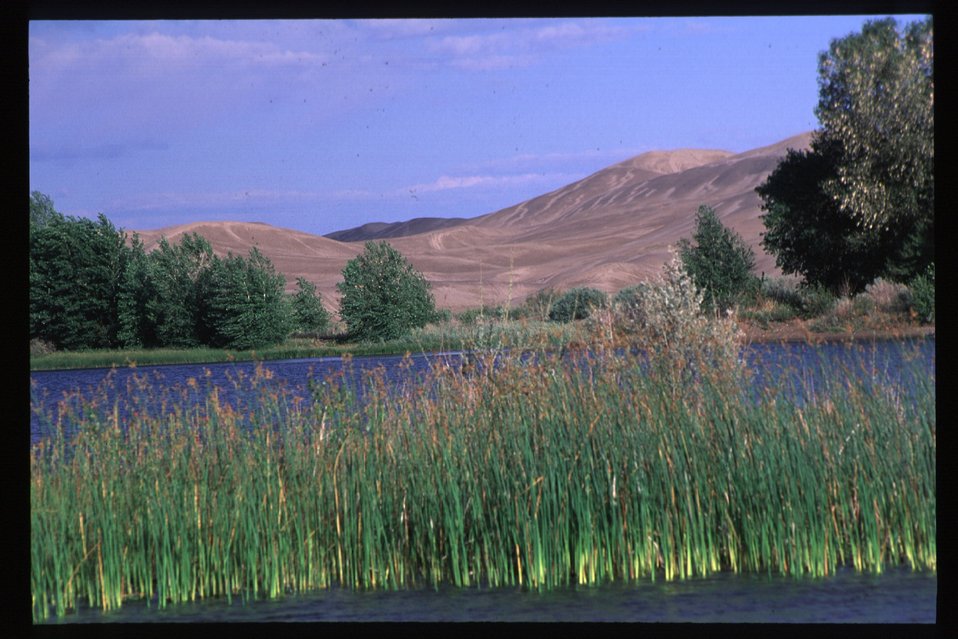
Recreation St Anthony Sand Dunes Off Highway Vehicles Idaho Falls Field Office USRD Upper Snake River District